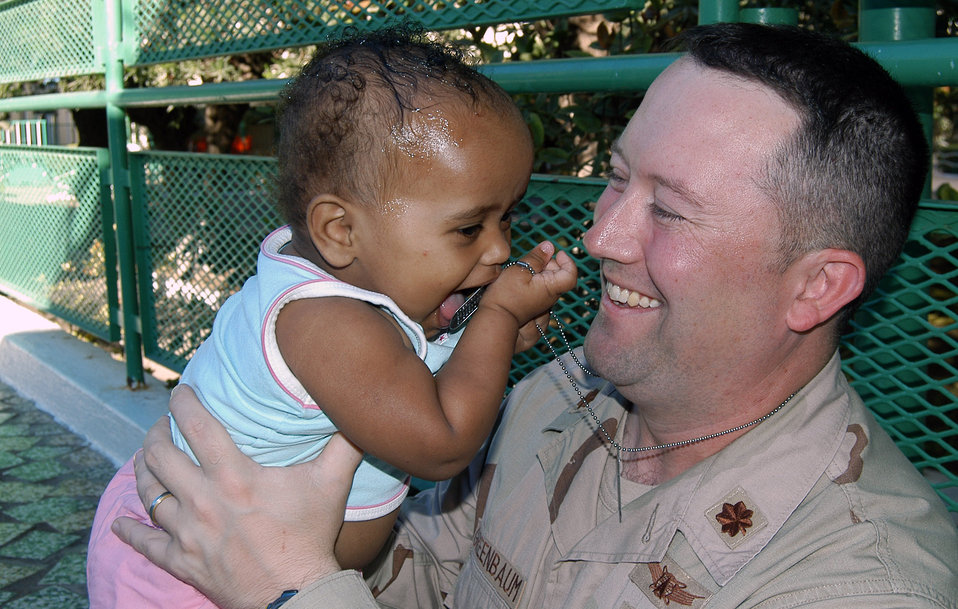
Coaxing a smile

Maj. Lanny B. Greenbaum coaxes a smile from a baby at an orphanage in Djibouti Jan. 26. Major Greenbaum is the Combined Joint Task Force-Horn of Africa information management officer.